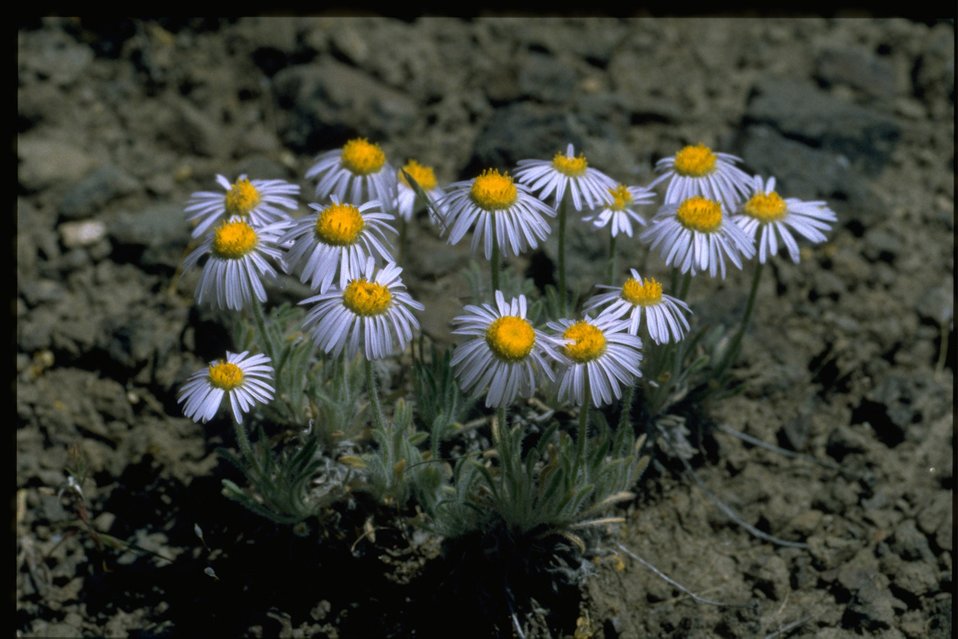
Medium shot of purple cushion fleabane (Erigeron poliospermus var. poliospermus).